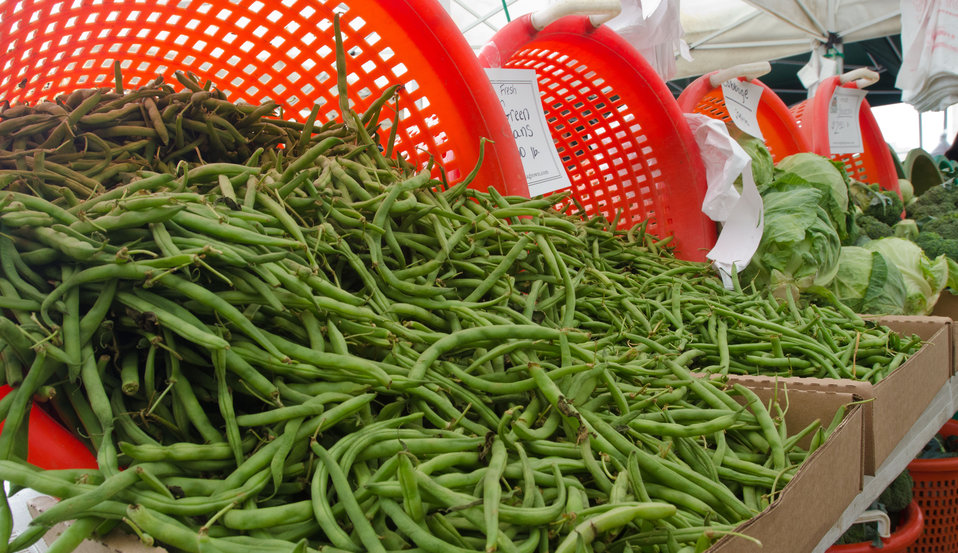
Fresh vegetables from C & T Produce at the U.S. Department of Agriculture (USDA) summer farmers market opening of the 17th season at the USDA Whitten Building east parking lot in Washington, D.C., on Friday, May 31, 2012. This year's theme is Grow, Healthy, Eat Healthy & Be Healthy. USDA and Fuel Up to Play 60, in partnership with the National Dairy Council and the National Football League, invited residence, visitors and local school children to participate in opening day activities. Hip Hop Public Health featuring Easy A.D. from Cold Crush Brothers and disk jockey Artie Green play music and invite people to get up on stage to dance or hula hoop to get active. D.C. Truck Farm help people know from what plants, that certain herbs, fruit and produce come from by giving tail-gate tours of the garden growing in the bed of their pickup truck. The Peoples Garden Initiative and USDA Executive Master Gardeners gave away a variety of fruit and produce seedlings to include the Tomato ‘Abraham Lincoln’ in celebration of the USDA 150th Anniversary and to share their harvest. New features for 2012 include an on-site sign language interpreter, a hand washing station, and a USDA-certified organic vendor. Other products selling today are fresh fruits, vegetables, herbs, baked goods, meats, kettle popcorn, local honey, hand-made soap and more.